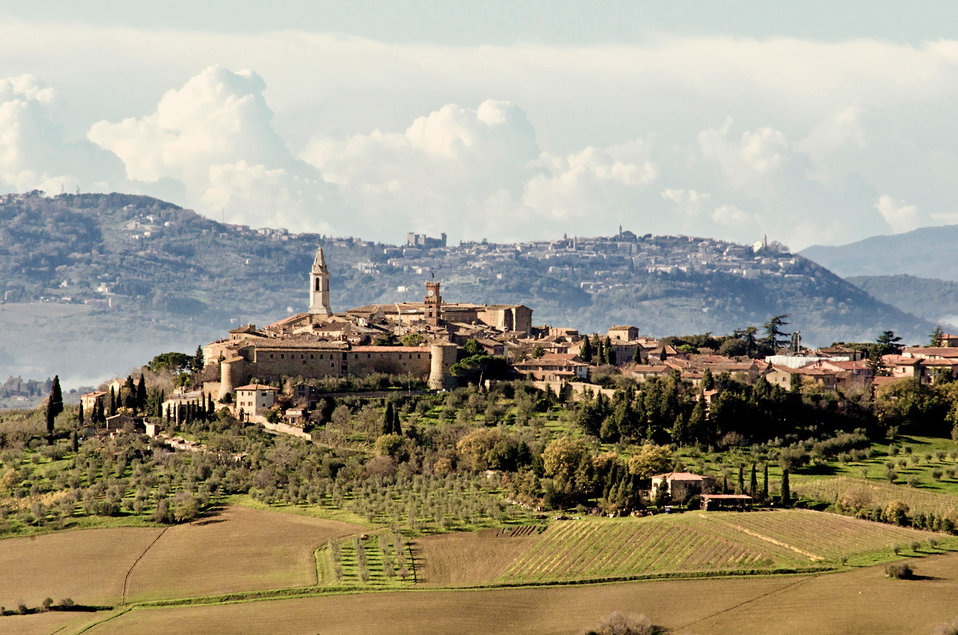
Pienza and montalcino

Pienza, tuscany, tuscan landscape.